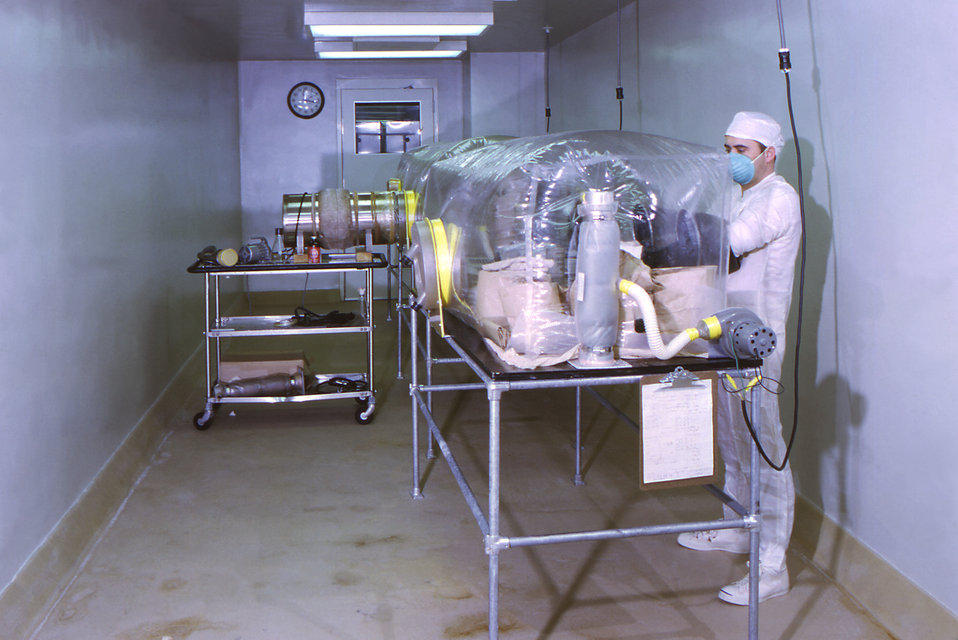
This historic 1967 image depicts a former Centers for Disease Control (CDC) laboratorian using what was an early anaerobic enclosure within which he was carrying out experiments, which demanded that the atmosphere be oxygen-free.